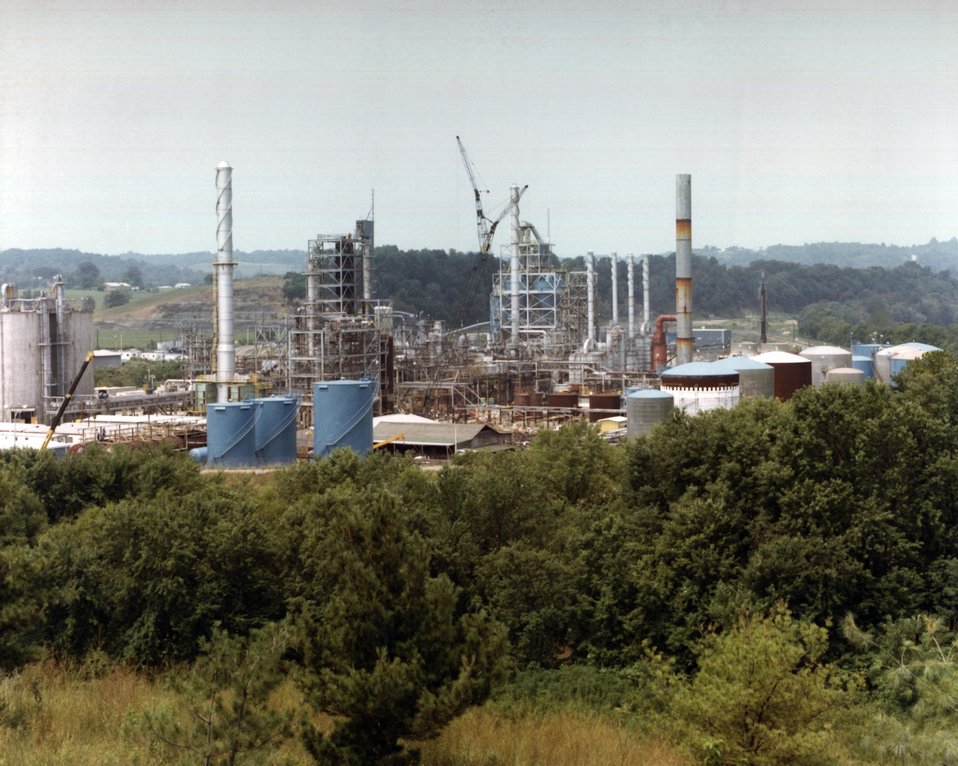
AN OVERVIEW OF THE H-COAL PILOT PLANT.